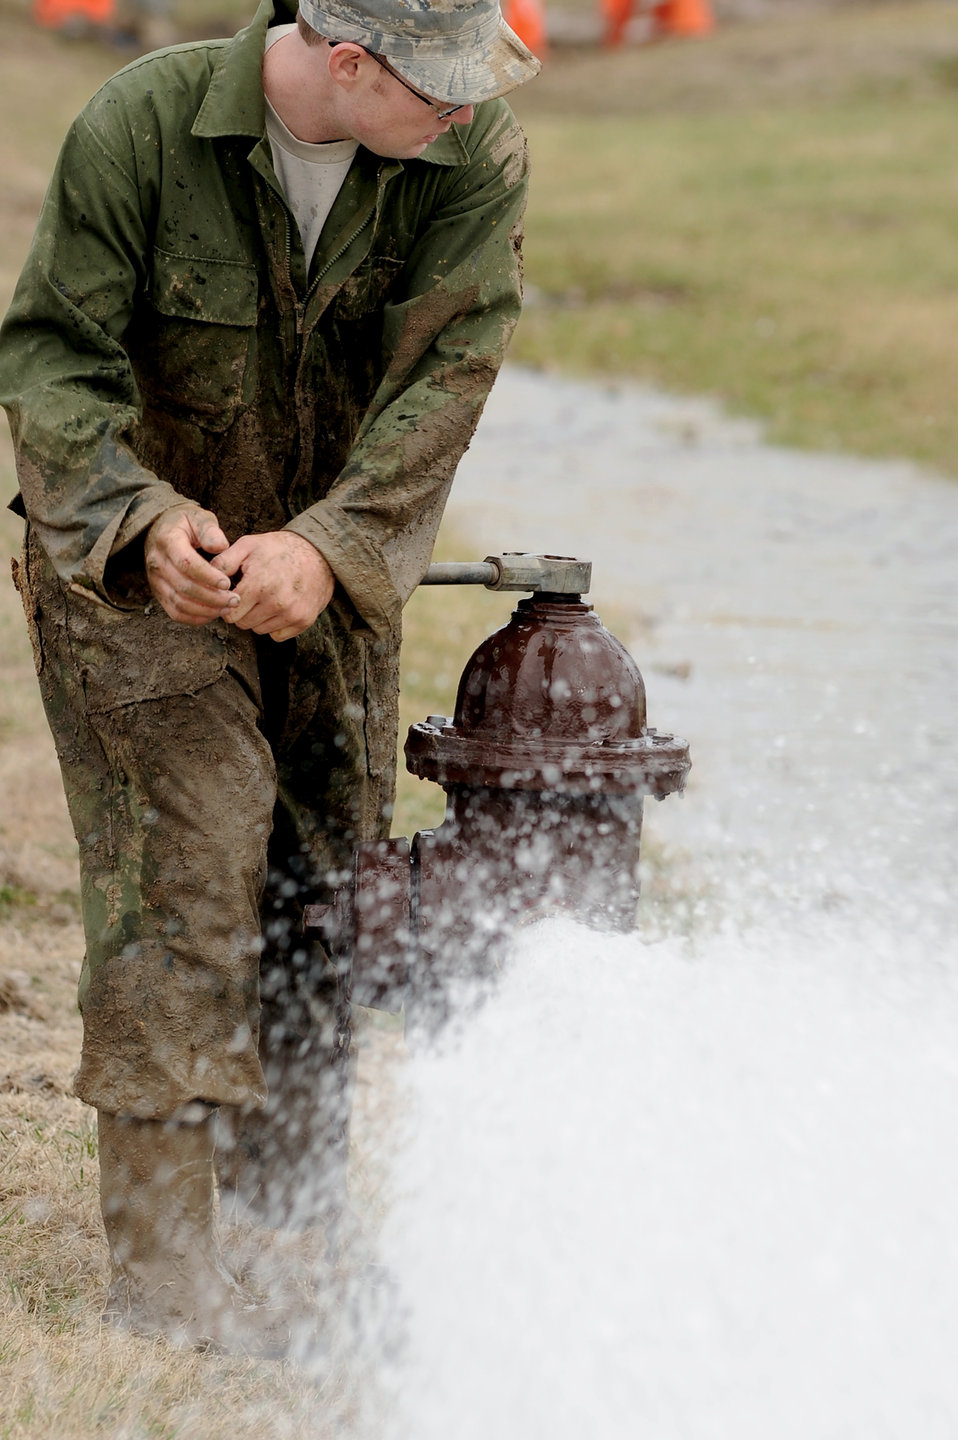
Maintenance specialists

Staff Sgt. Justin England uses a fire hydrant to flush a repaired water main March 7, 2011, at Whiteman Air Force Base, Mo. Sergeant England is a maintenance specialist assigned to the 509th Civil Engineer Squadron.